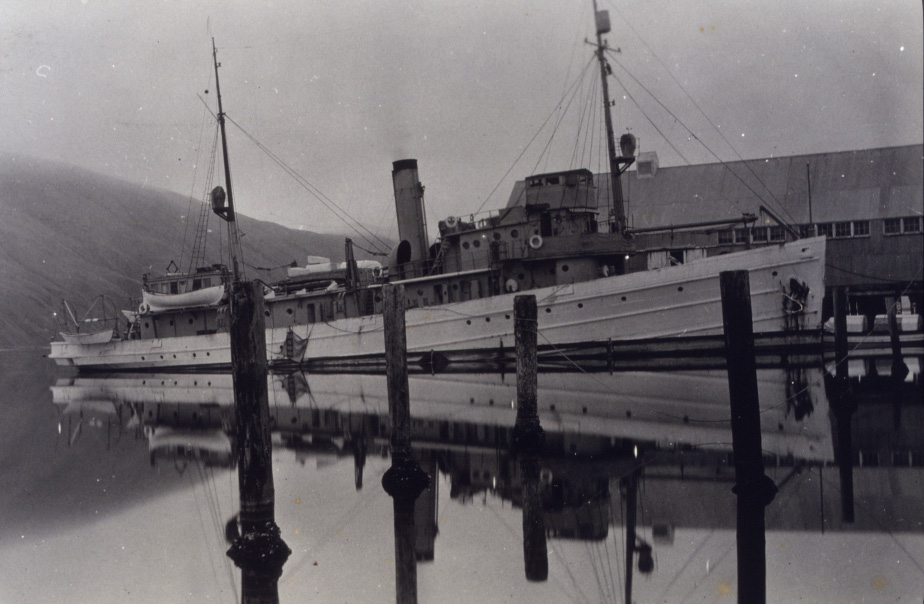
Coast and Geodetic Survey Ship PIONEER at Dutch Harbor. In service 1922 - 1941. Pacific service